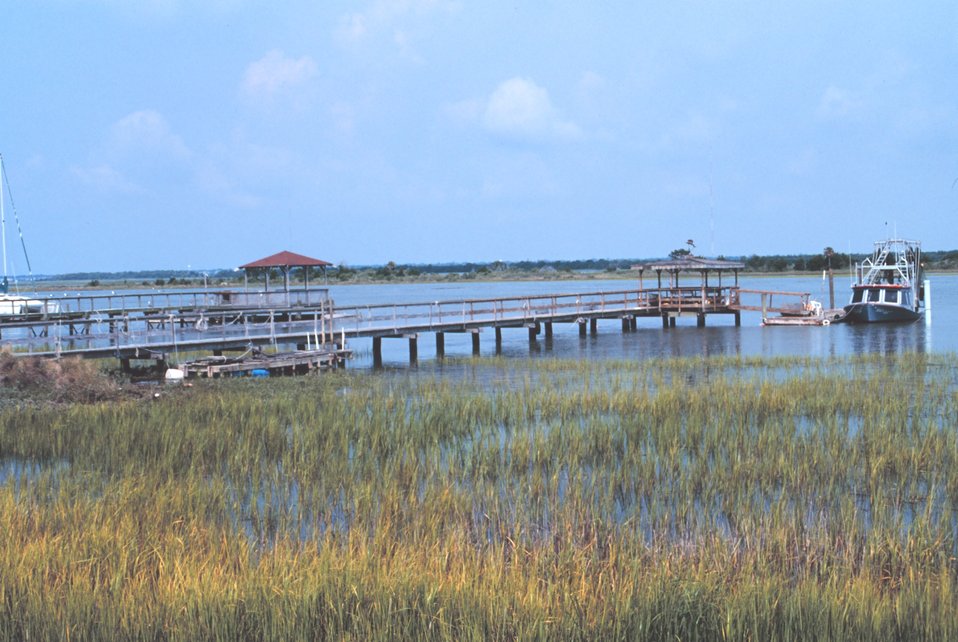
Small shrimp boat tied up at a private pier